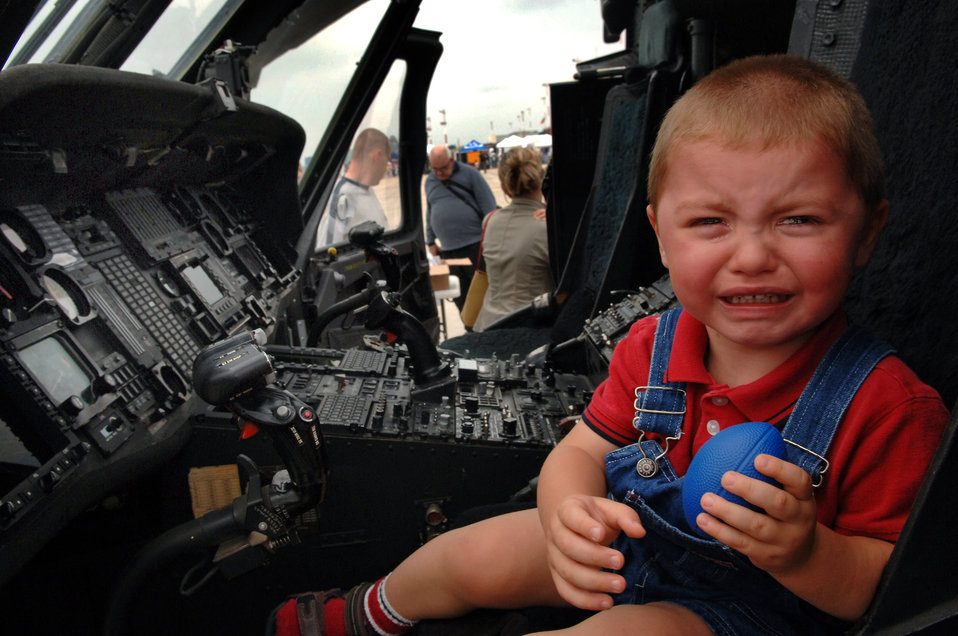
I want to be an Airman!

A young boy doesn't want to leave the cockpit of an HH-60 Pave Hawk helicopter on display Aug. 11 during an Air Force 60th Anniversary air show at Ramstein Air Base, Germany.